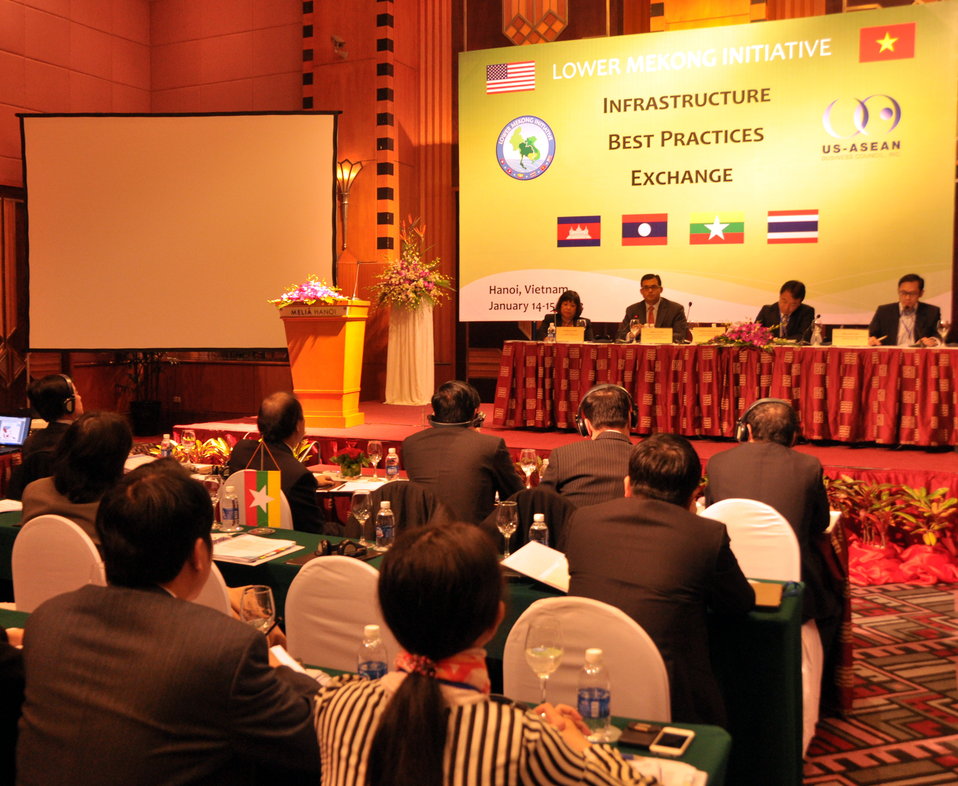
Delegates to the LMI Infrastructure Best Practices Exchange

Hanoi: January 14, 2013